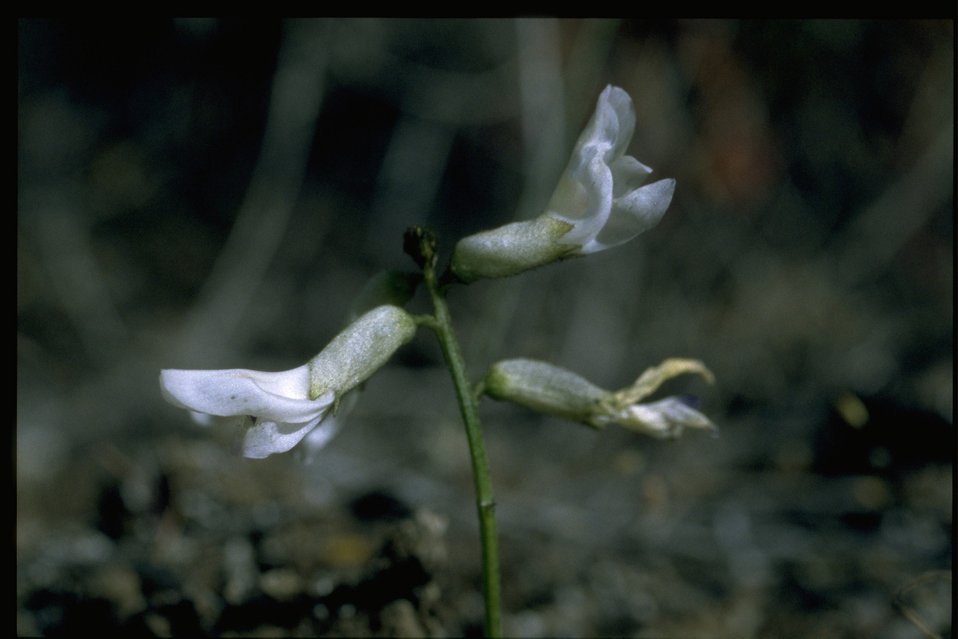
Closeup shot of Idaho milkvetch (Astragalus conjunctus).